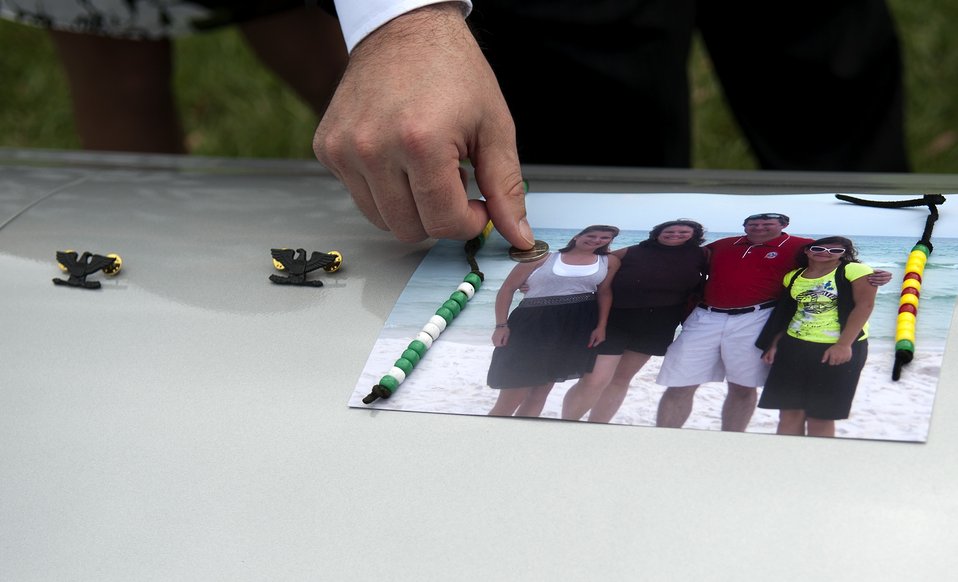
Full military honors

Friends and family place personal items on the casket of Col. Wendell Keller, of Fargo N.D. and Capt.Virgil K. Meroney, of Fayetteville, Ark., after their official funeral at the Arlington National Cemetery Oct. 20, 2012. March 1, 1969, Col. Wendell Keller and Capt. Virgil Meroney were the crew of an F-4D Phantom II aircraft that went down while carrying out a night time strike mission in Khammouan Province, Laos. Nearby aircrews reported seeing the aircraft hit by enemy fire. No parachutes were seen after the aircraft was hit. Heavy enemy presence in the area prevented recovery efforts. Between 1994 to 2011, the